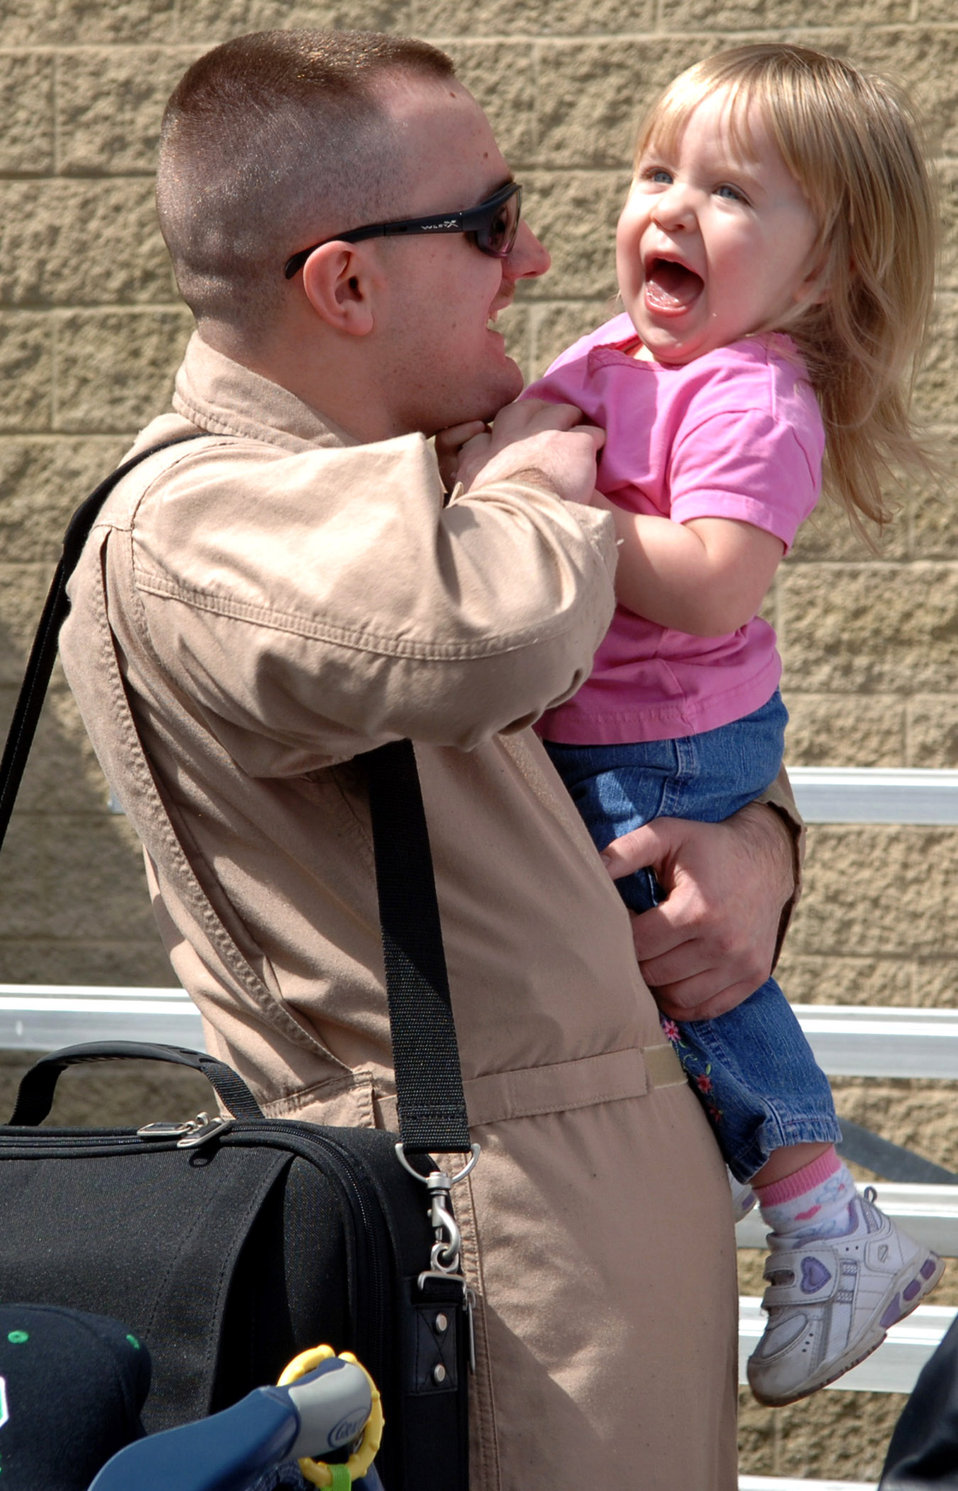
Fairchild Airmen reunite with family after deployment

Staff Sgt. Michael Overman tickles his 2-year-old daughter, Miquela, after disembarking a KC-135 Stratotanker April 30 at Fairchild Air Force Base, Wash. Sergeant Overman returned with 44 other Airmen after their deployment to support Operation Enduring Freedom at Manas Air Base, Kyrgyzstan.